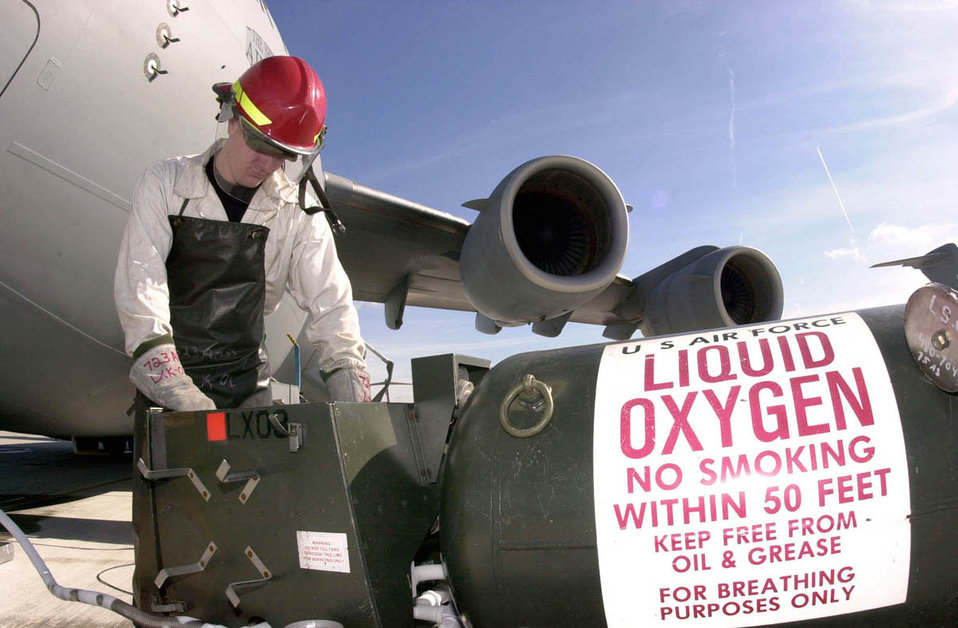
LOX

RAMSTEIN AIR BASE, Germany -- Staff Sgt. Donald Nykamp from the 437th Aircraft Generation Squadron at Charleston Air Force Base, S.C., services liquid oxygen into a C-17 Globemaster III on Oct. 11. C-17s are being used to airdrop humanitarian daily rations over Afghanistan as part of Operation Enduring Freedom.